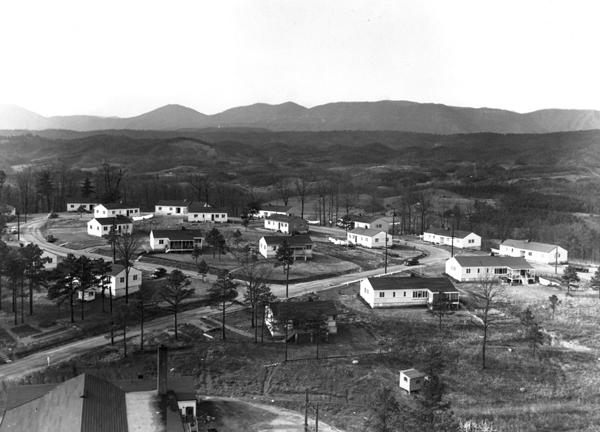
Aerial of Oak Ridge